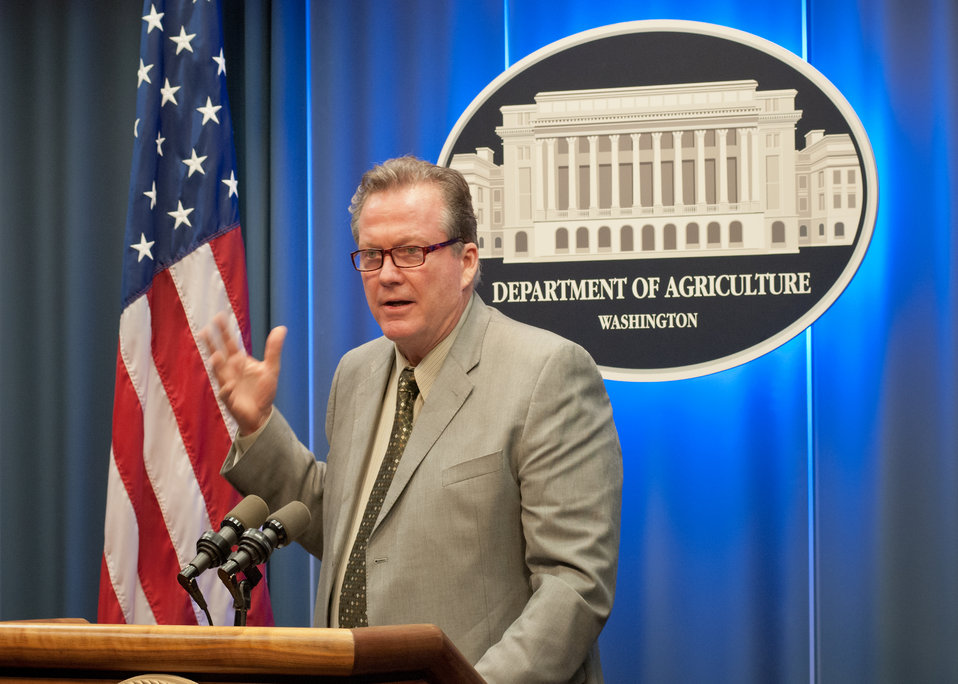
Steve Murray, Murray Family Farms, Bakersfield, CA. a user of the On-Farm Food Safety Project Tool, www.onfarmfoodsafety.org, described a producers experience with the risk management tool and the fact that it saved him thousands in consultant fees. Murray along with Agriculture Deputy Secretary Dr. Kathleen Merrigan and leaders from agriculture and food organizations announced the release of the tool at the United States Department of Agriculture in Washington, DC Thursday, December 15, 2011. The On-Farm Food Safety Project is the first of its kind and was developed by a broad coalition of farm and produce industry partners with lead funding from the USDA Risk Management Agency.